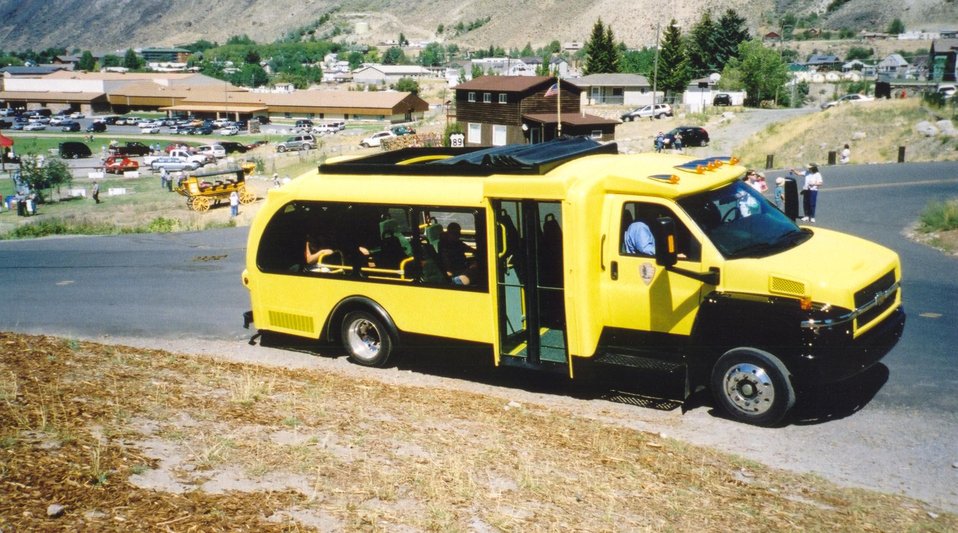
NEW YELLOW BUS, A MODERNIZED VERSION OF THE YELLOWSTONE NATIONAL PARK TOUR BUS.

DOE'S IDAHO NATIONAL ENGINEERING AND ENVIRONMENTAL LABORATORY IS WORKING WITH INDUSTRY, THE DEPARTMENT OF TRANSPORTATION AND THE NATIONAL PARK SERVICE ON DEVELOPING AND TESTING THE NEW YELLOW BUS. THE VEHICLE IS DESIGNED TO BE A LOW-EMISSION, COST EFFECTIVE COMMUNITY AND TRANSIT BUS OF THE FUTURE. AMONG ITS FEATURES ARE AN ENTRY RAMP THAT CAN ACCOMMODATE WHEELCHAIRS AND A RETRACTABLE ROOF ALLOWING PASSENGERS GREATER VISIBILITY. THE WHEELS CAN ALSO BE REPLACED WITH TRACKS FOR TRAVELING OVER SNOW.